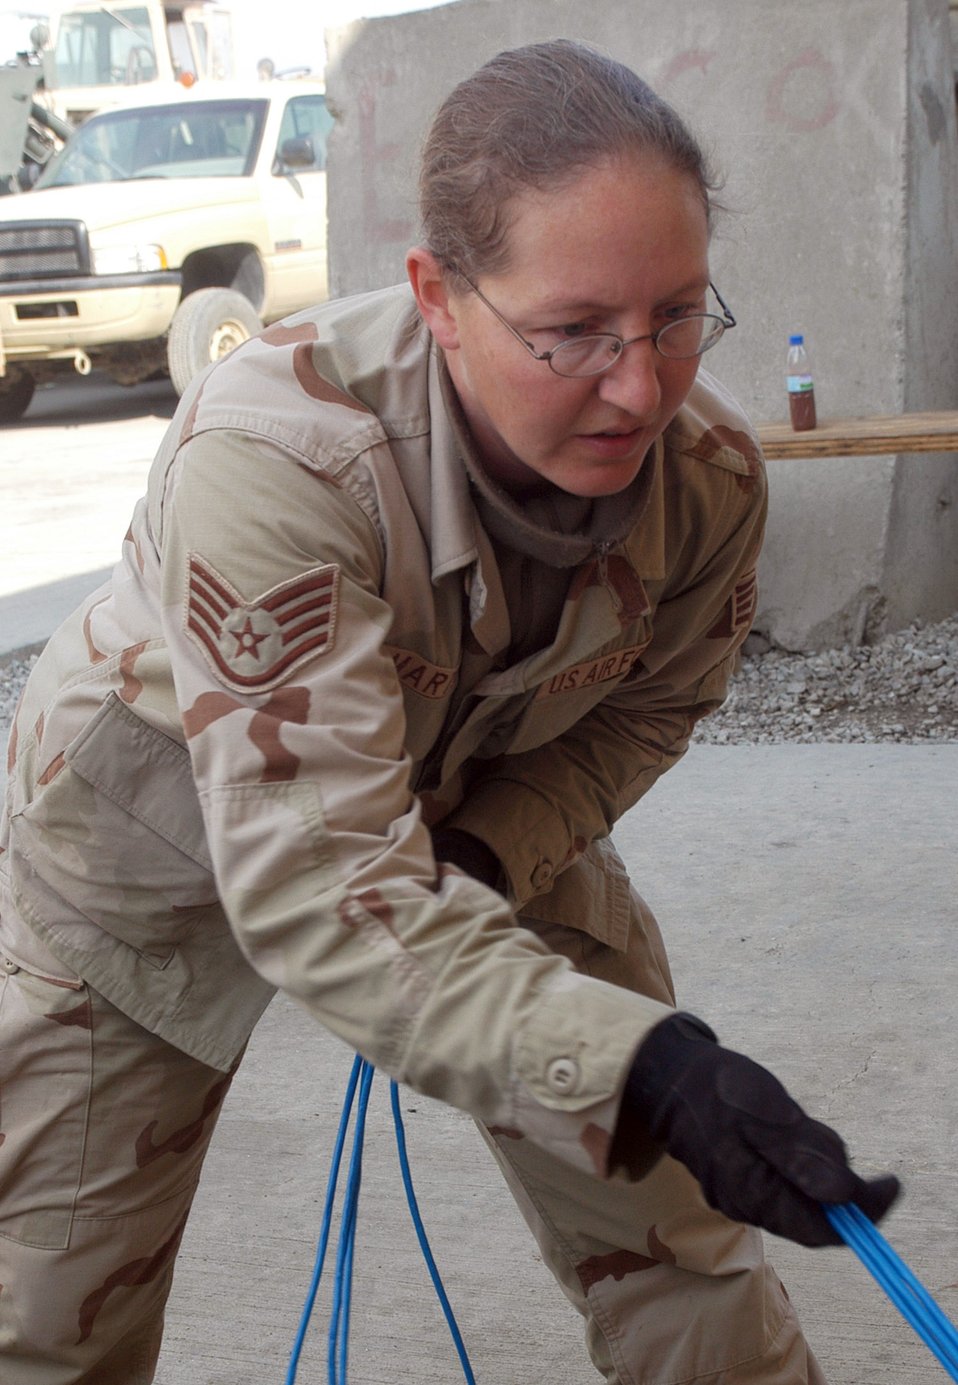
Restoring the Connection

BAGRAM AIRFIELD, Afghanistan -- Staff Sgt. Carey Martin helps replace 75 yards of broken network cable. Since arriving here in September the team has re-run more than 20 network lines. Sergeant Martin, a native of Lafayette, Ind., is deployed from Davis-Monthan Air Force Base, Ariz.